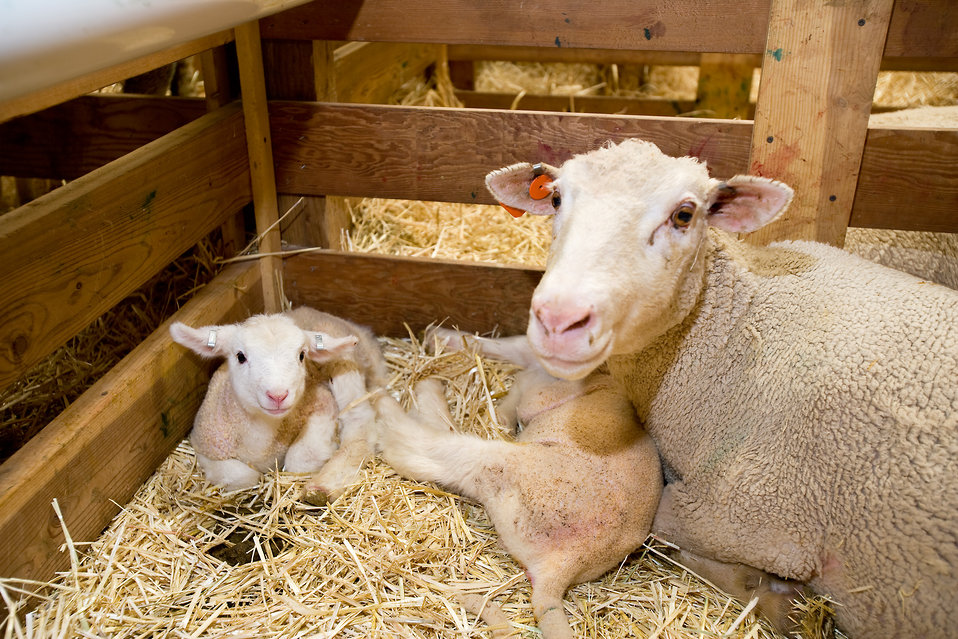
A ewe and her lambs rest in their pen on Apr. 21, 2006.